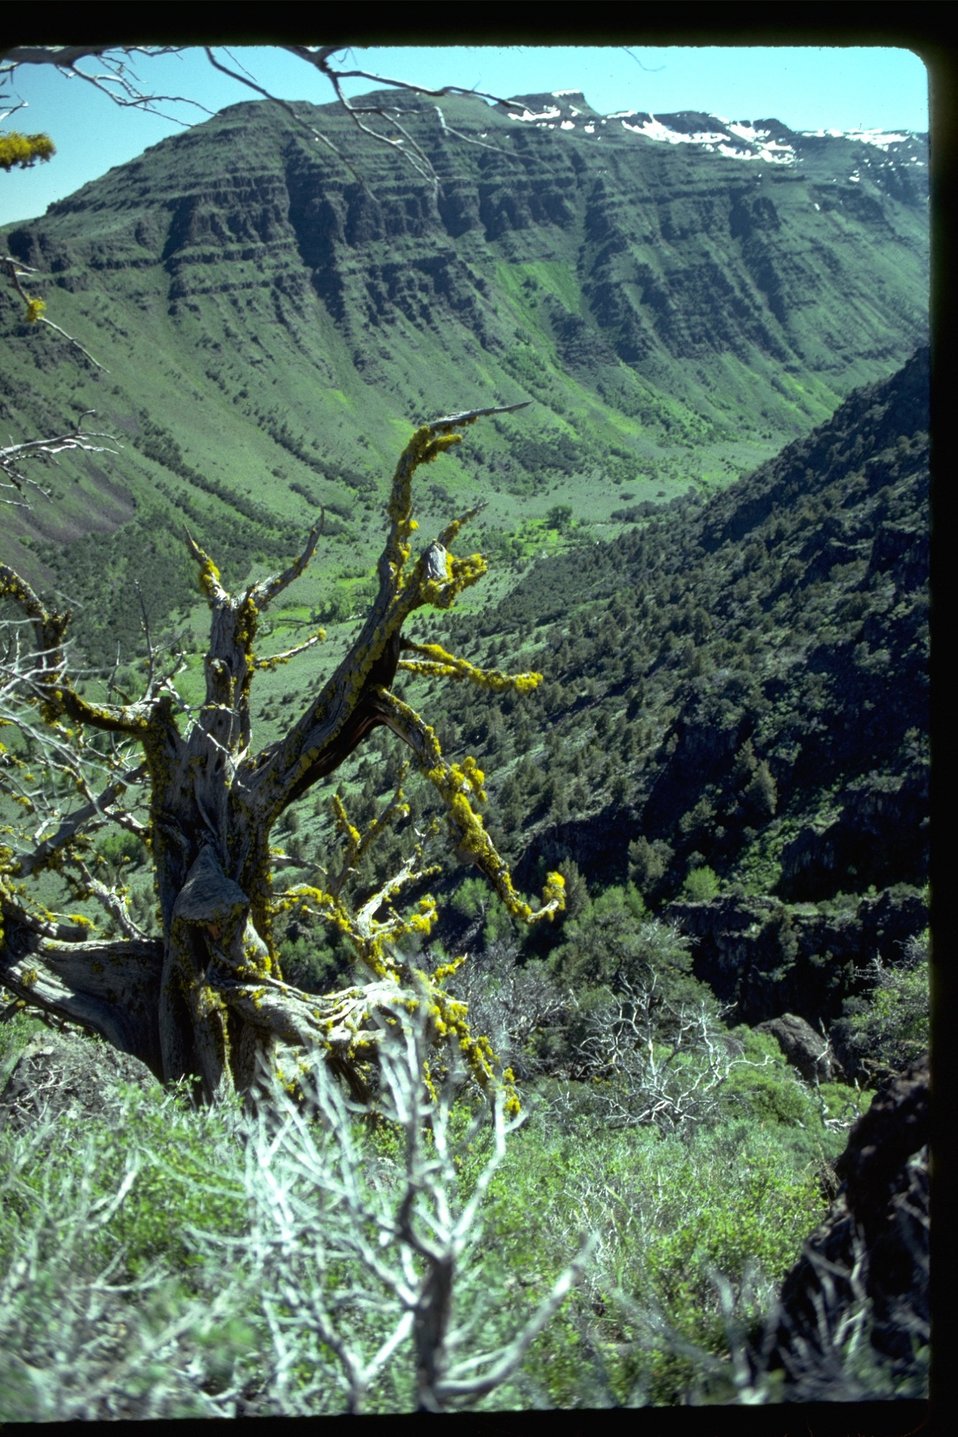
Little Blitzen Canyon.